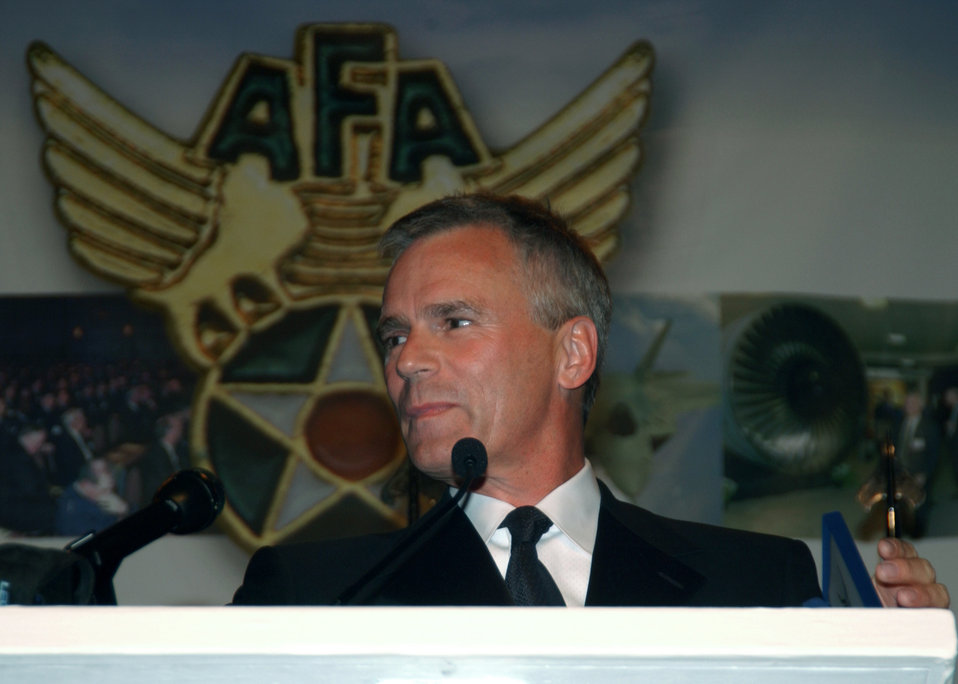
Air Force honors SG-1 actor, producer

WASHINGTON -- Actor and executive producer Richard Dean Anderson of